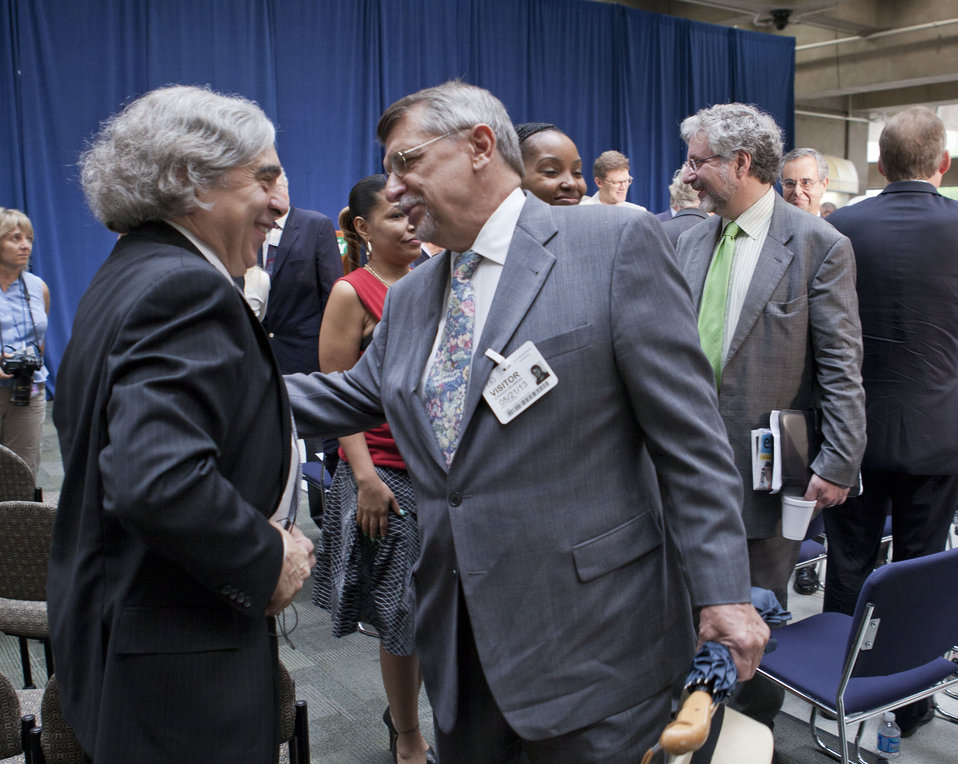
Secretary Moniz Meets DOE Employees

After the ceremony, attending members of the Department of Energy community were able to meet Secretary Moniz. Many friends and colleagues welcomed him back to the Department of Energy.